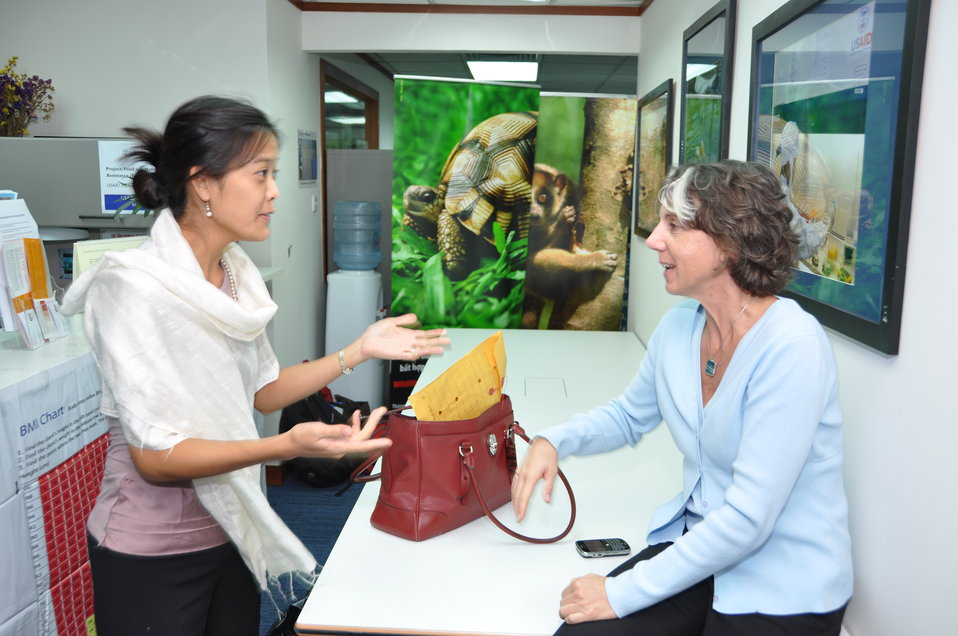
USAID Vietnam Open House 50th Anniversary, Hanoi